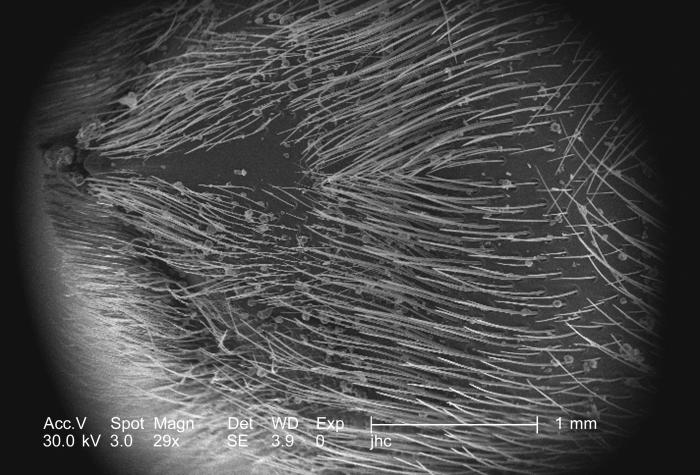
Under a very low magnification of only 29x, this scanning electron micrograph (SEM) revealed some of the morphologic features encountered at the distal tip of a male carpenter bee's, Xylocopa virginica, abdomen. Note the absence of a stinger, for male carpenter bees have no stinger, and therefore, cannot sting, while females do have a stinger, and though they can sting, they very rarely do.